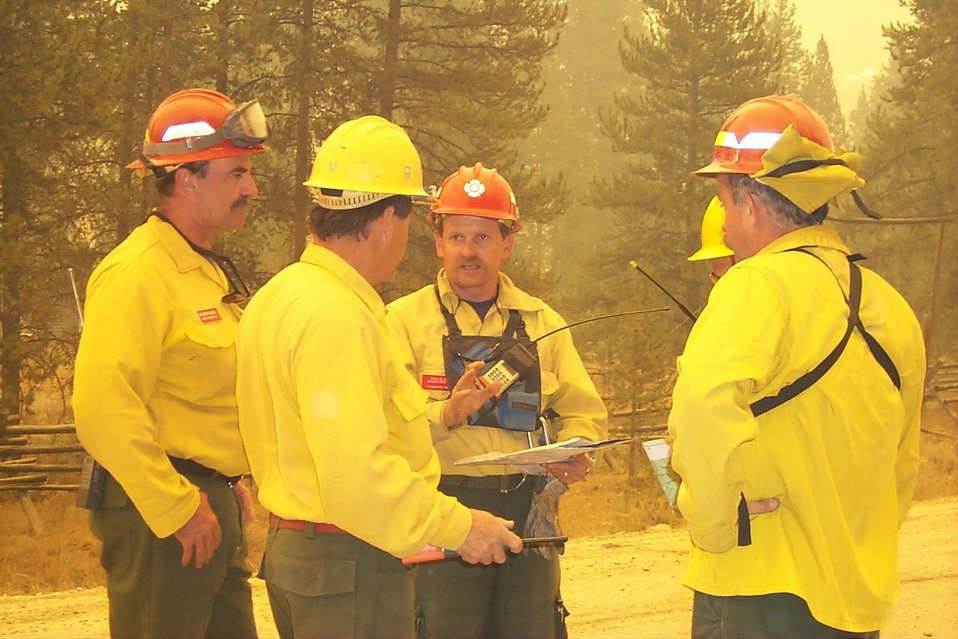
Fire crew planning Fire Clearwater Fire Salmon Field Office USRD Upper Snake River District